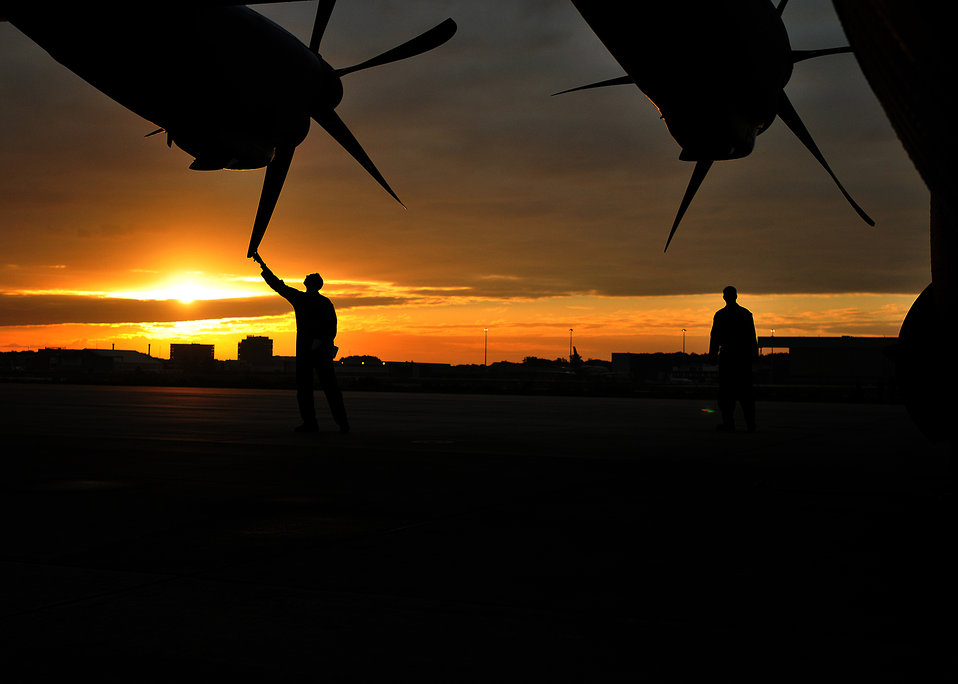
By dawn's early light

Crewmembers of a C-130J Super Hercules assigned to the 37th Airlift Squadron at Ramstein Air Base, Germany, perform a preflight inspection at Einhoven Airport, Holland, Sept. 18, 2010. The crew flew to Holland to participate in the 66th anniversary of Operation Market Garden, the largest airborne assault in the Netherlands during World War II.